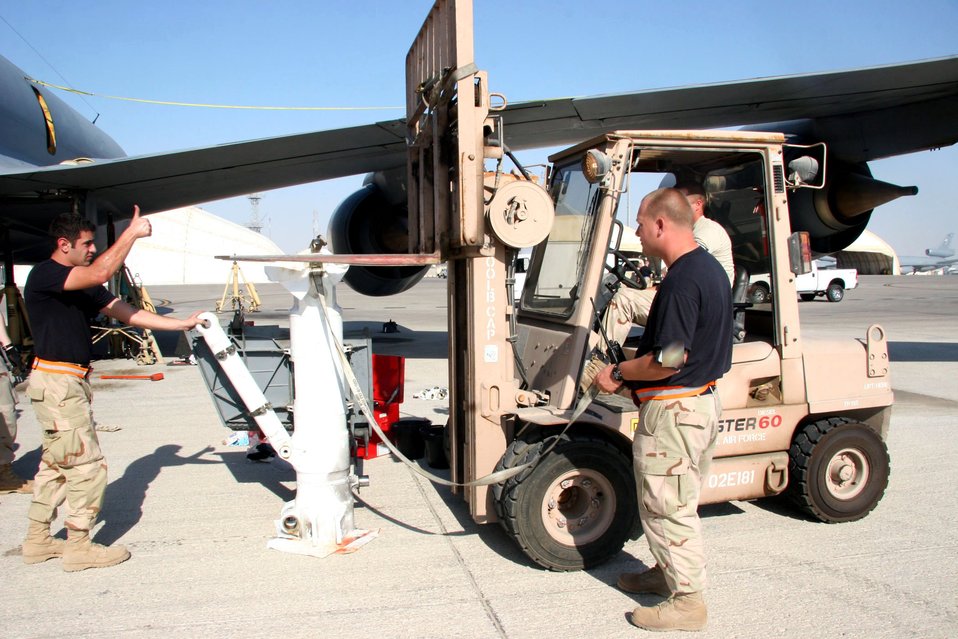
KC-135 strut change

Staff Sgt. Mohammed Abouhesham (left) and Tech. Sgt. Nathan Darnell spot while Tech. Sgt. Jeremy Polk uses a fork lift to carefully lower the upper landing gear strut cylinder of a KC-135 Stratotanker to the ground Dec. 21. The Airmen are assigned to the 380th Expeditionary Aircraft Maintenance Squadron and deployed from the 22nd Aircraft Maintenance Squadron at McConnell Air Force Base, Kansas.